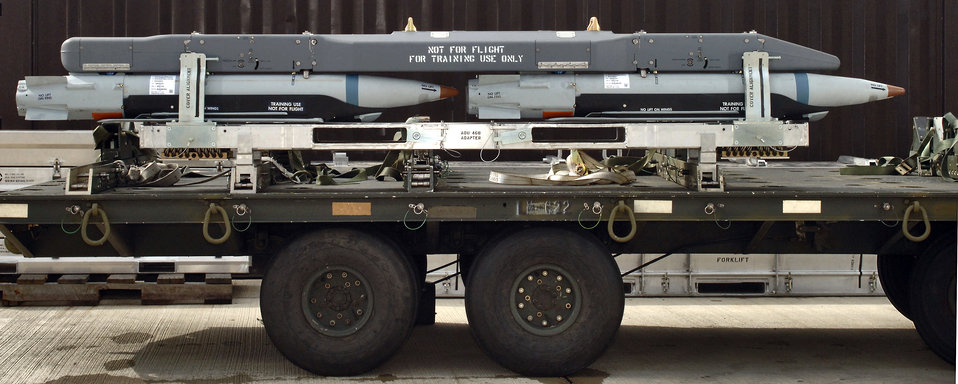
Small-diameter bomb makes Strike Eagle squadron more lethal

The Bomb Rack Unit 61 with carrier and four ground-training Guided Bomb Unit-39 small-diameter bombs on this munitions trailer undergoes testing at Royal Air Force Lakenheath, England, on Aug. 1. The 494th Fighter Wing will be the first unit to receive and use the bomb when it deploys to Southwest Asia later this year.